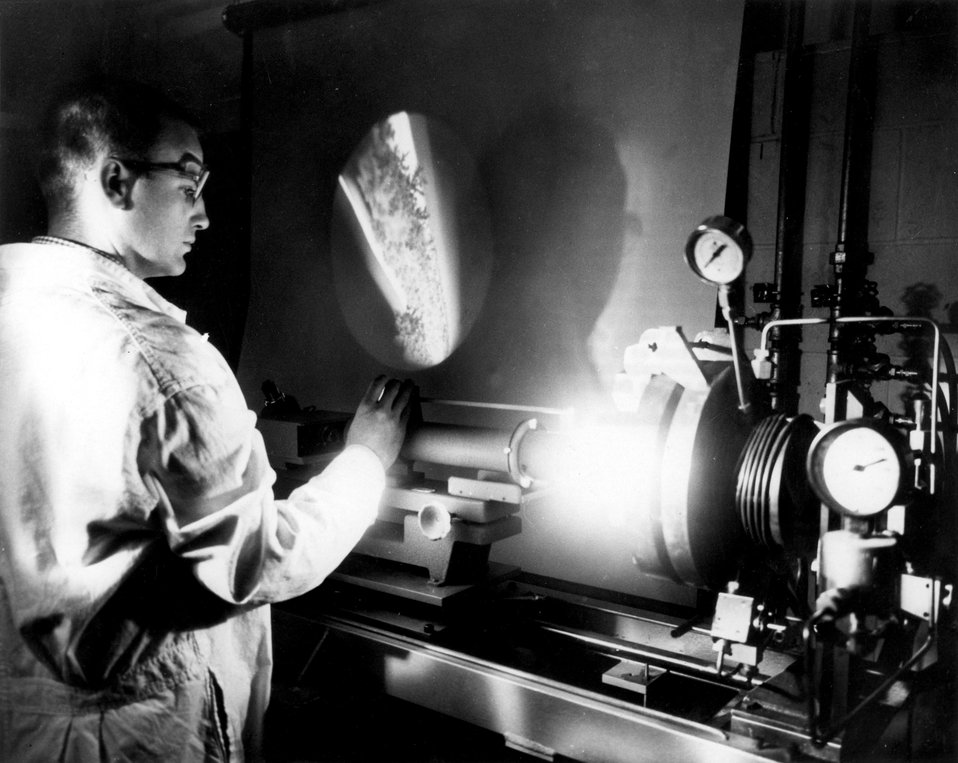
Unique applications of equipment are commonplace at the Atomic Energy Commission's Pacific Northwest Laboratory. Here Battelle senior technician Dick Lewis uses optical equipment to make microscopic examination of ceramics at temperatures to 6000 degrees F. c. 1966